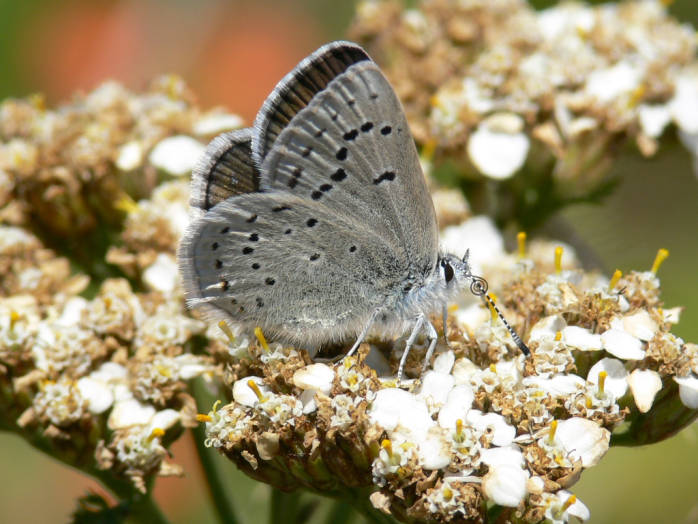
Mission Blue Butterfly (endangered)

Photo credit: Patrick Kobernus

A female mission blue butterfly rests on a yarrow plant located on the Southeast ridge of San Bruno Mountain, California. As of 14 December 2009, the 'mission blue butterfly' (Icaricia icarioides missionensis) is listed as Endangered under the U.S. Endangered Species Act.